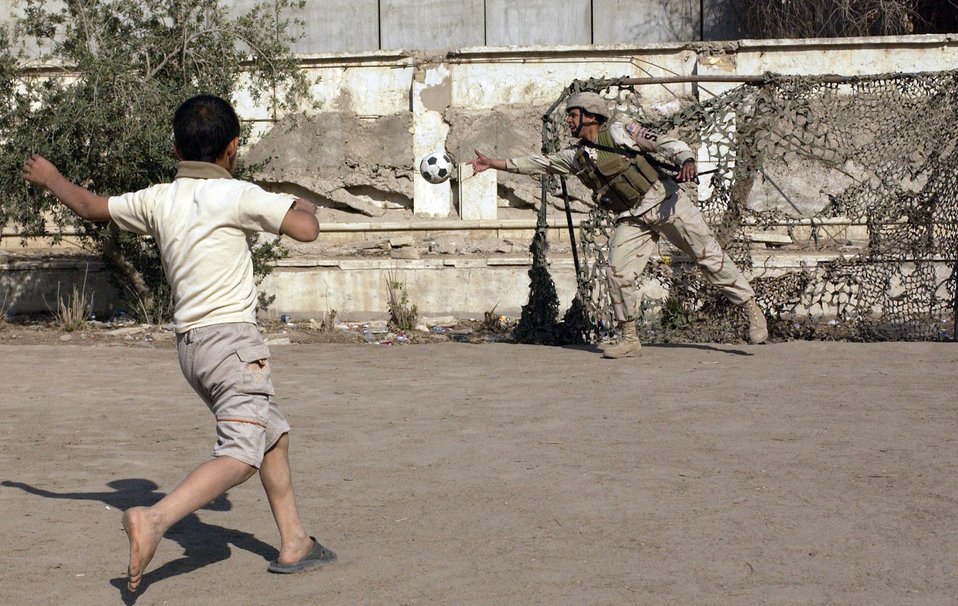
Kickin' it

Staff Sgt. Raymond Hardson plays soccer with an Iraqi boy during a visit with local Iraqi families living in the International Zone, Baghdad, Iraq, on Wednesday, March 29, 2006. Sergeant Hardson is with the 732nd Expeditionary Security Forces Squadron.